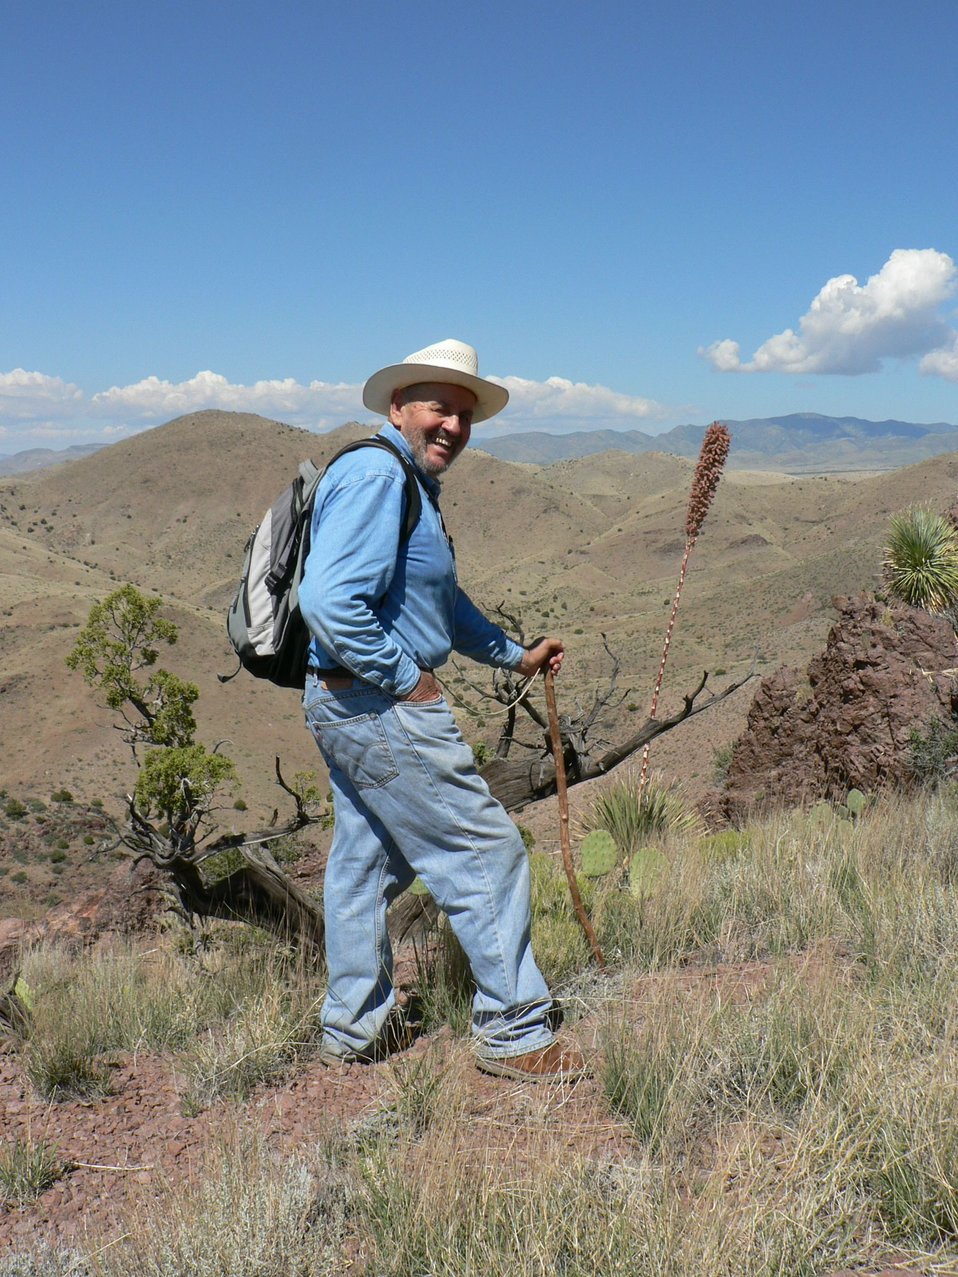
John Bertrand on Chupadera Peak Trail

Friends member John Bertrand hikes Chupadera Peak at Bosque del Apache National Wildlife Refuge in New Mexico.